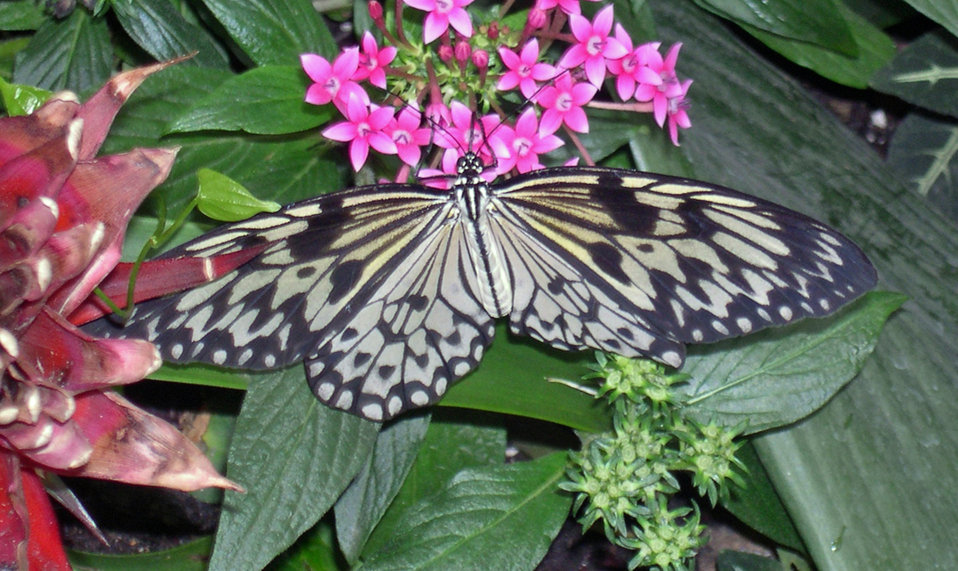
Idea leuconoe at Diergaarde Blijdorp